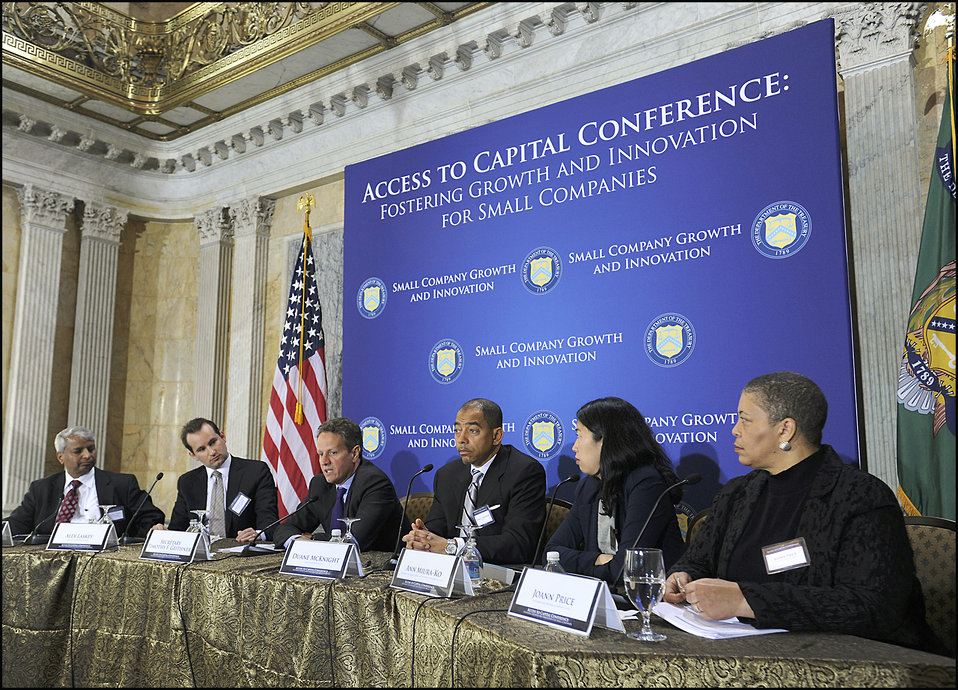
Access to Capital Conference

Treasury Secretary Tim Geithner moderated the first panel of the day on 'Pre-IPO Funding: Seed Capital, Angel Investors, Venture Capital, and Growth Equity.' Panelists included Desh Deshpande, Chairman of Sparta Group and Member of the National Advisory Council on Innovation and Entrepreneurship (NACIE); Alex Laskey, President and Founder of OPOWER; Ann Miura-Ko, Partner at Floodgate Capital and Lecturer at Stanford University; Duane McKnight, Senior Partner of SYNCOM; and Joann Price, Co-founder and Partner at Fairview Capital.